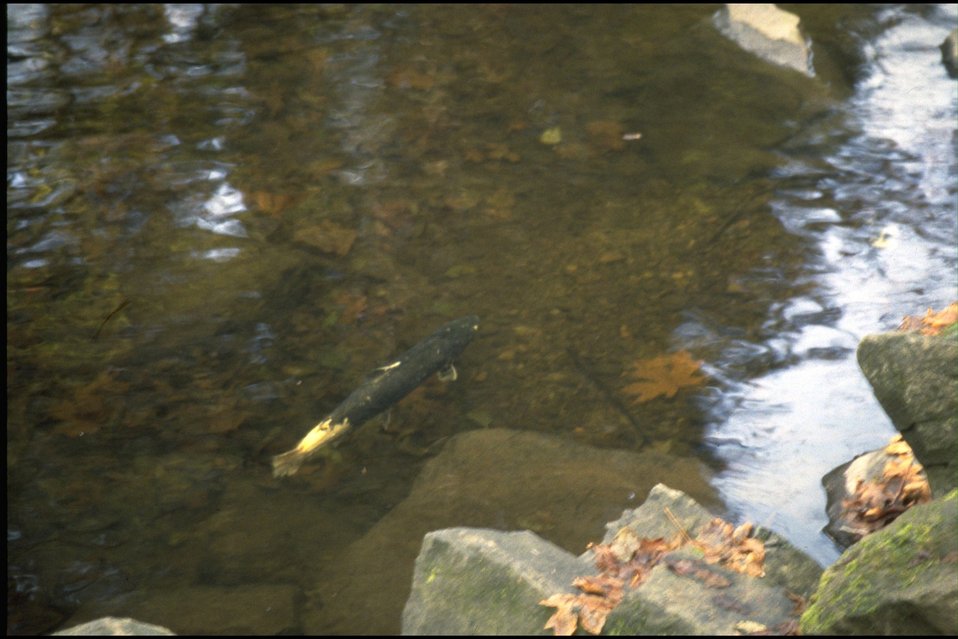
Salmon Watch Program (Whittaker Creek) - Meadow View School.